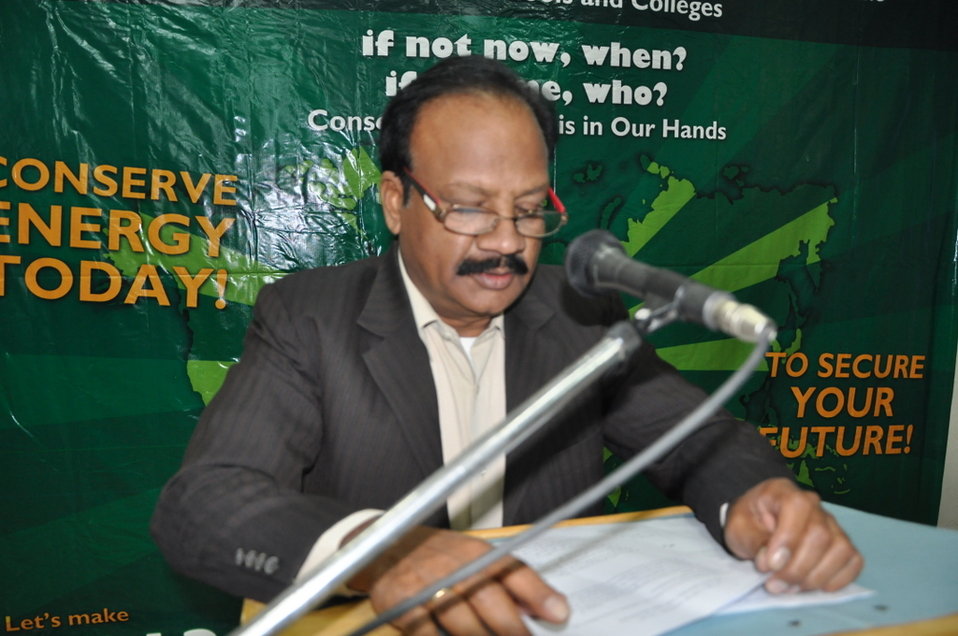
USAID Power Distribution Program-Energy Conservation Seminar Beaconhouse School System, Multan

Mr.Emanual Sardar(XEN,MEPCO), highlighting the role and functions of MEPCO as an electric distribution company, the importance of energy conservation and discussing measures that are being taken to resolve the prevailing electricity shortfall by saving electricity and preventing losses.